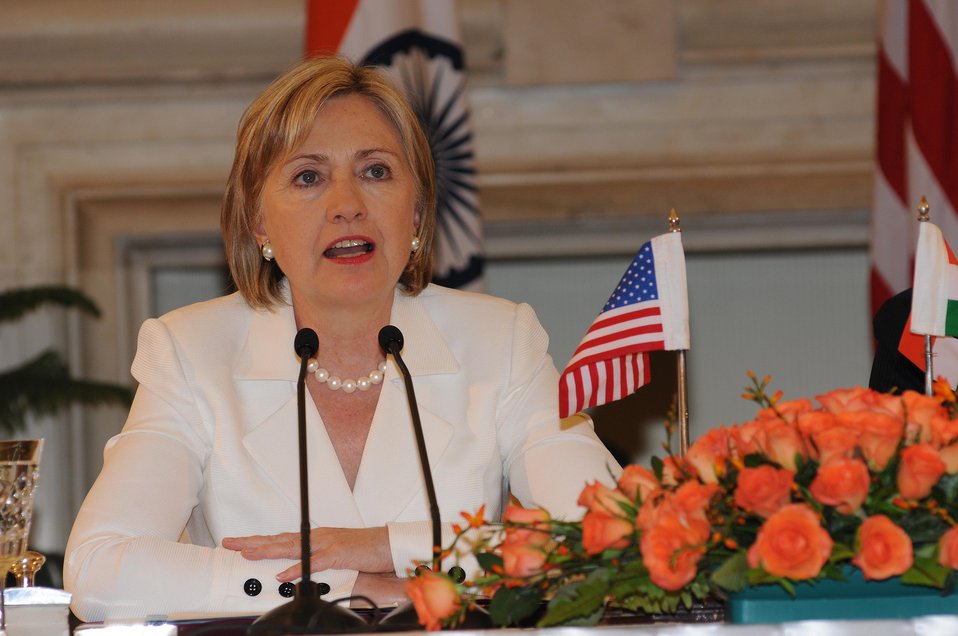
U.S., India Sign Bilateral Science and Technology Endowment Agreement

U.S. Secretary of State Hillary Rodham Clinton speaks to reporters following the signing of a U.S.-India bilateral science and technology endowment agreement in New Delhi, India July 20, 2009.